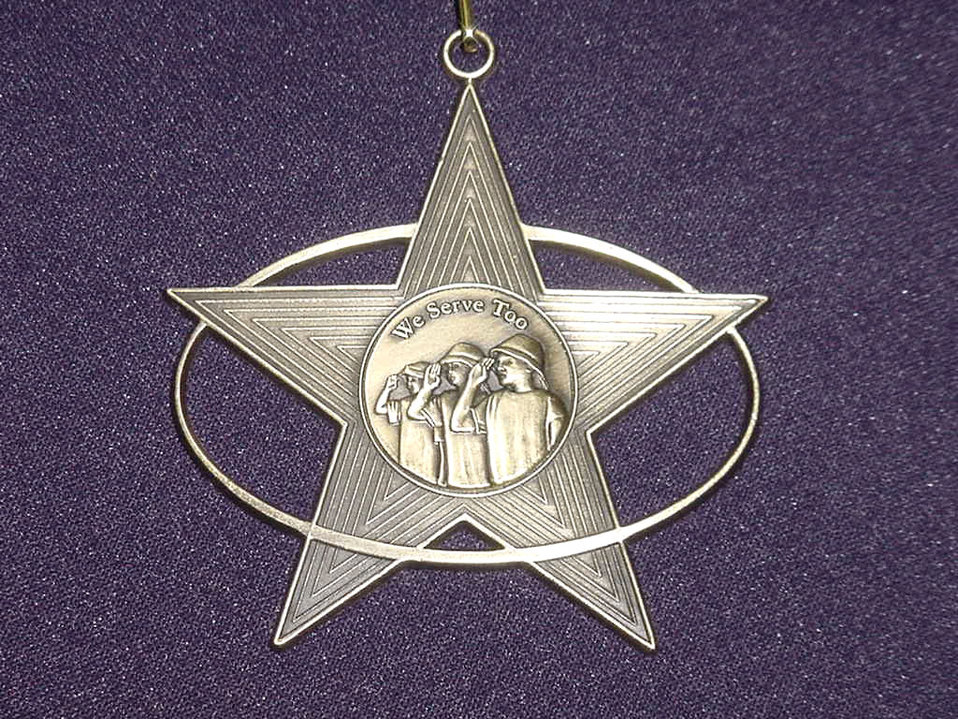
Youth Service Medal recognizes children's sacrifices

Children of deployed Massachusetts National Guard and Air National Guard servicemembers now receive this special Youth Service Award. The medals were created to recognize the service and sacrifice of the children during a deployment.